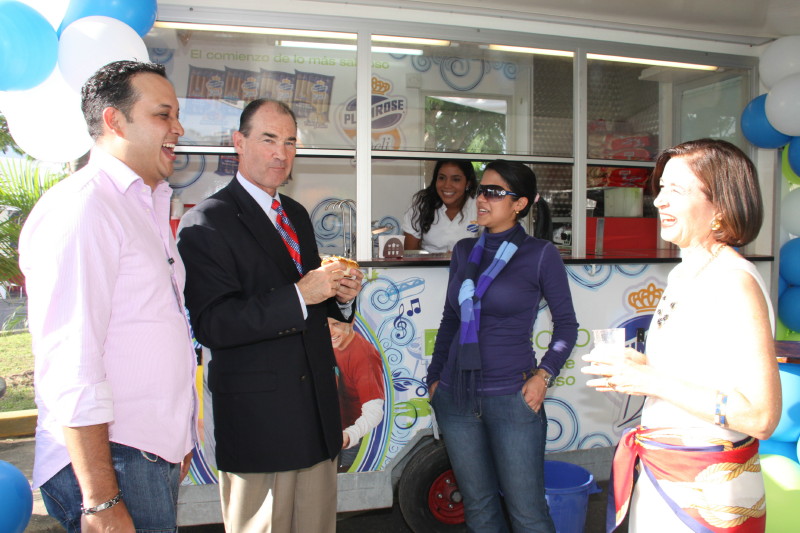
Ambassador Duddy and His Wife Mary Duddy Visit With Vendors

U.S. Ambassador to Venezuela Patrick D. Duddy and his wife, Mary Duddy, visit with vendors at the U.S. Embassy Caracas in Venezuela's U.S. Independence Day celebration on June 30, 2010.